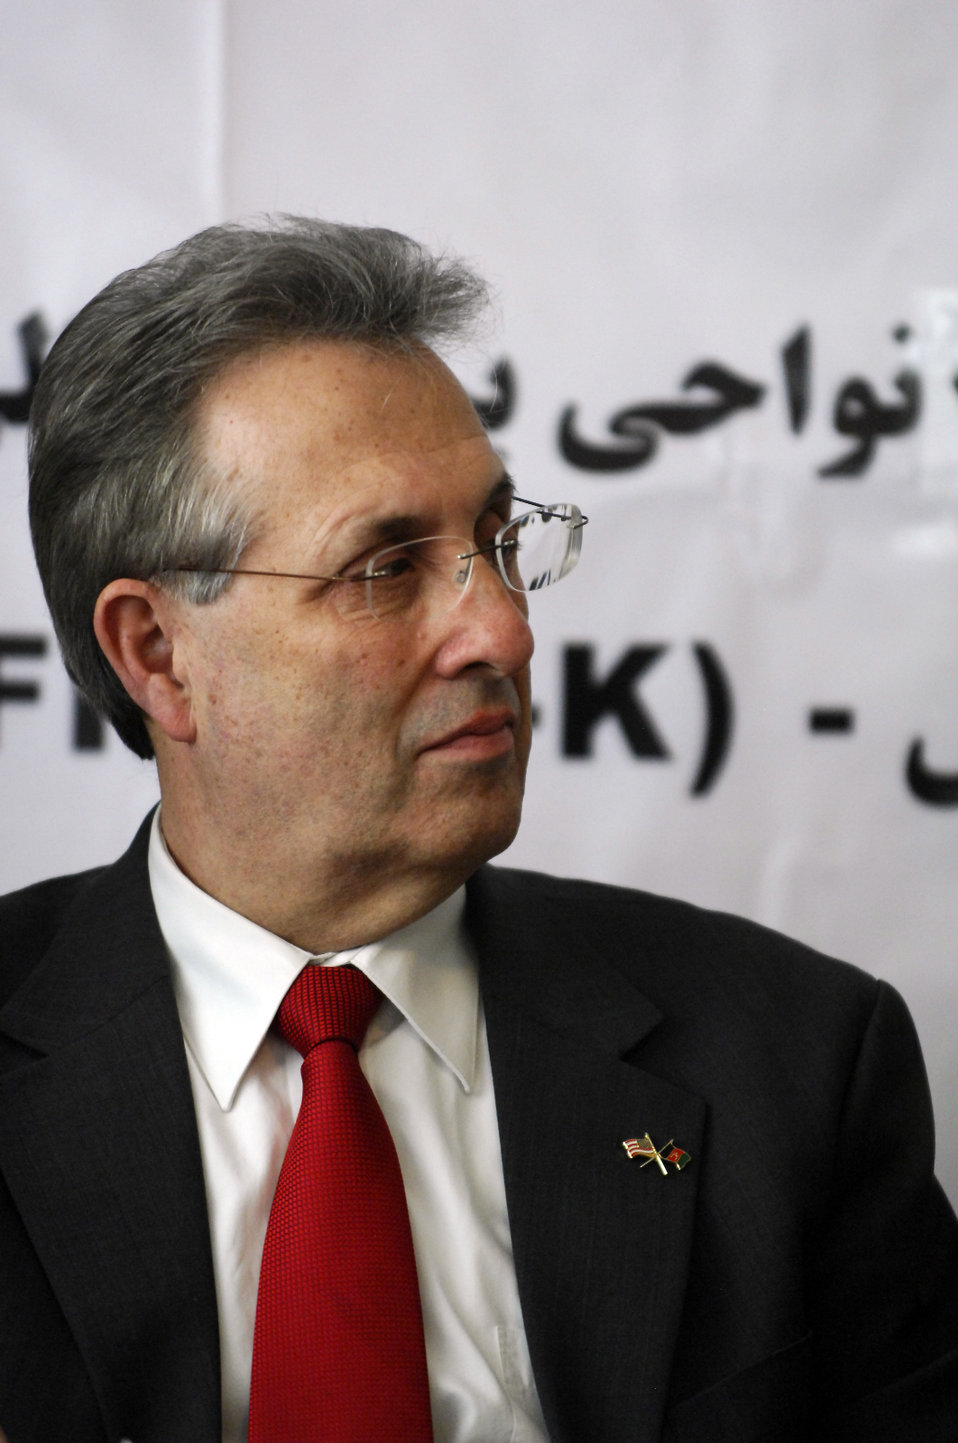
Care84 (1)